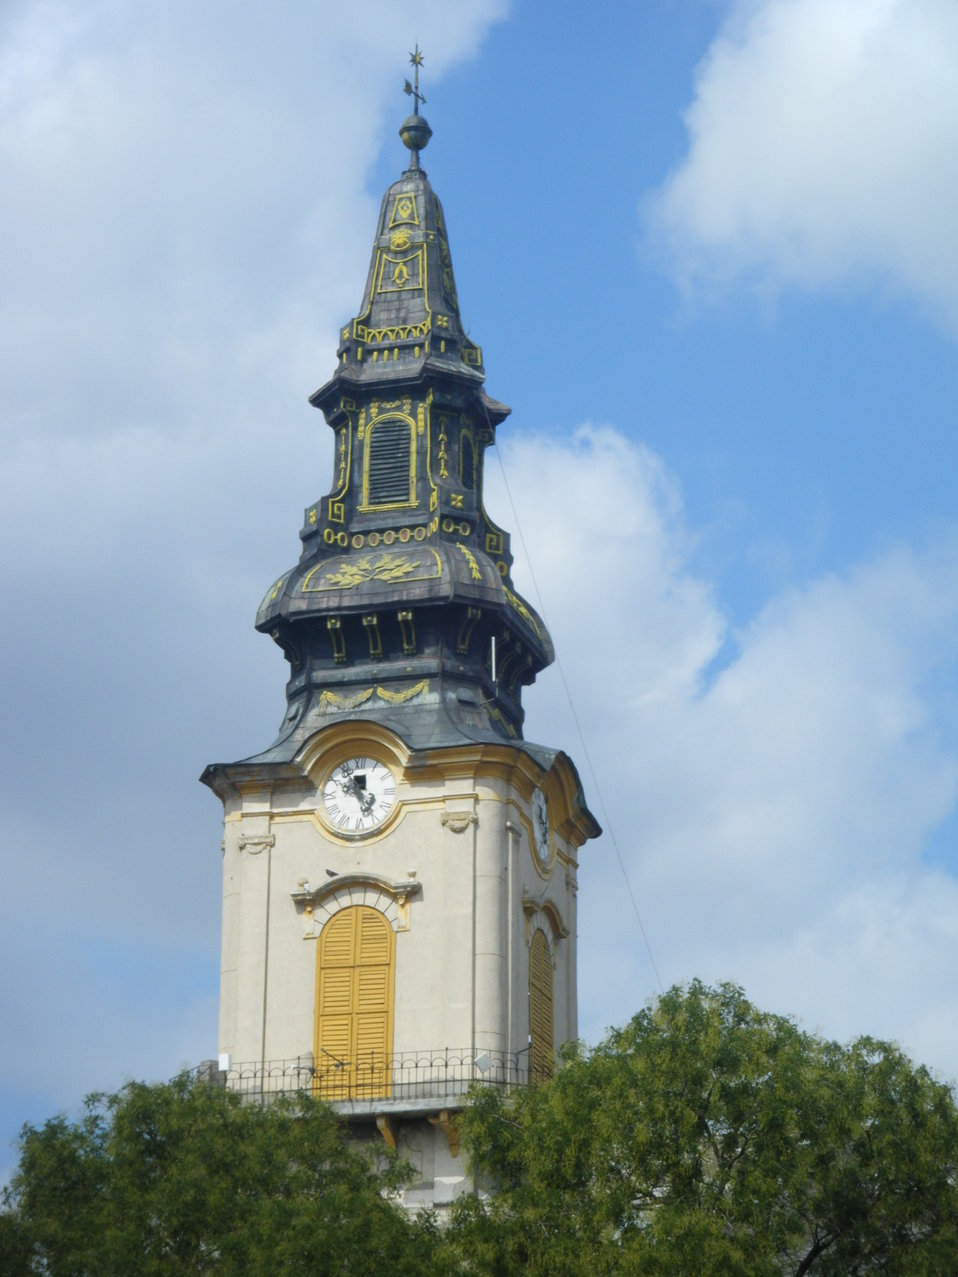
Magyar: A túrkevei református templom díszes tornya